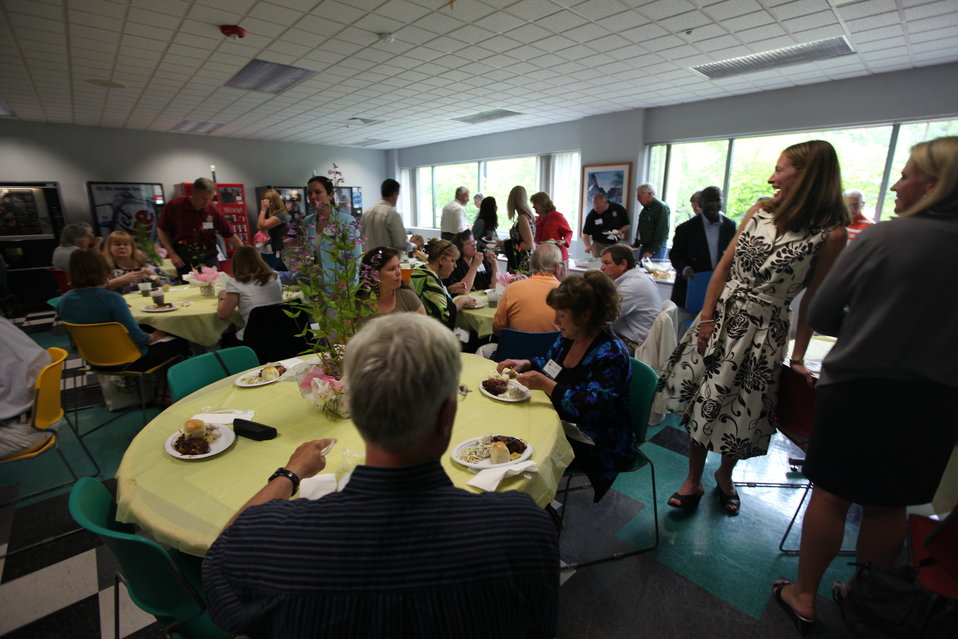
Northeast Region Employee Appreciation Awards

Luncheon